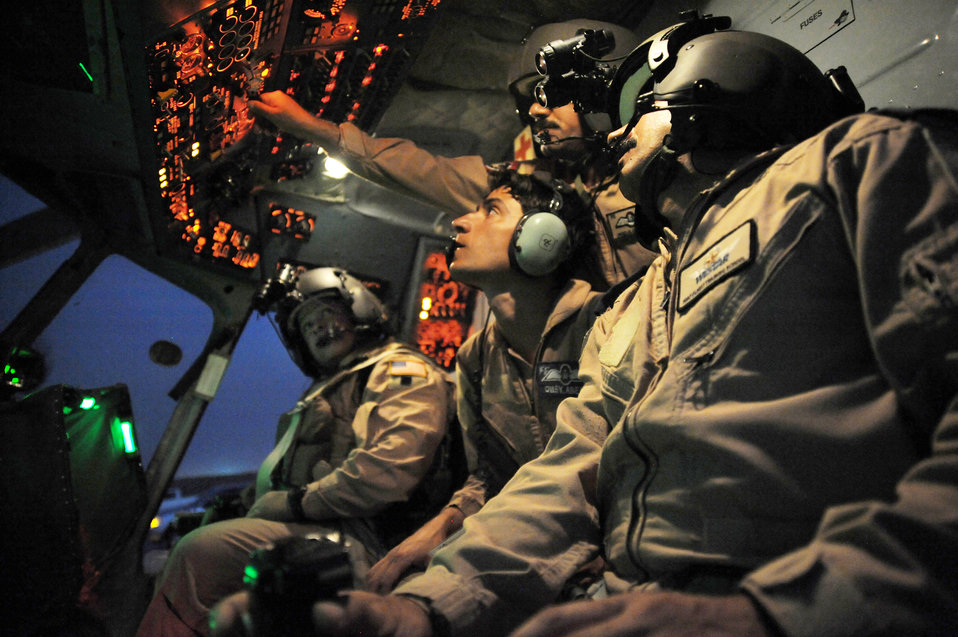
Airmen train, advise, assist Iraqi helicopter pilots

Maj. Christopher Elam (left) observes Iraqi air force pilots performing preflight procedures here prior to a helicopter mission using night-vision goggles Oct. 7, 2009, at Camp Taji, Iraq. The major teaches them how to operate, preflight and maintain NVGs. U.S. Air Force instructor pilots assigned to the 721st AEAS train, advise and assist Iraqi helicopter pilots around the clock, helping them develop their own air force. Major Elam is deployed from Kirtland Air Force Base, N.M., and hails from Evanston, Ill.